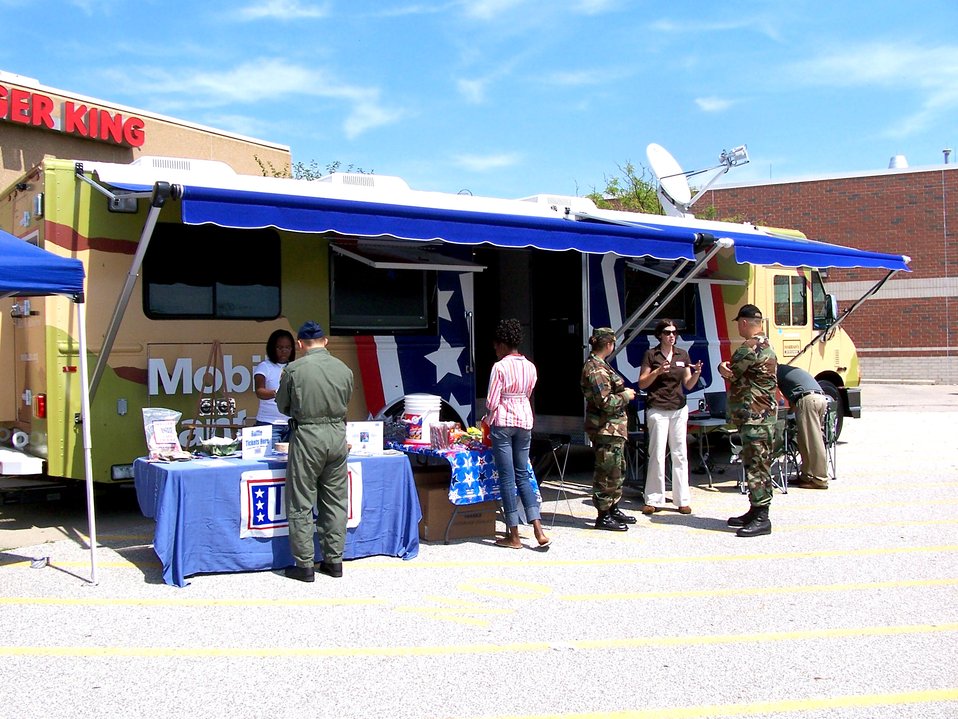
USO takes to the road in new mobile canteens

Members of the Michigan Air National Guard and other visitors to the base exchange at Selfridge Air National Guard Base, Mich., stop by the Mobile United Service Organizations' station Aug. 11. The canteen is one of three such vehicles the USO began using this year to bring the USO to servicemembers who may not regularly come in contact with the organization. There are no USO facilities in Michigan. The mobile center offers a TV lounge, wireless Internet access and other recreational offerings.